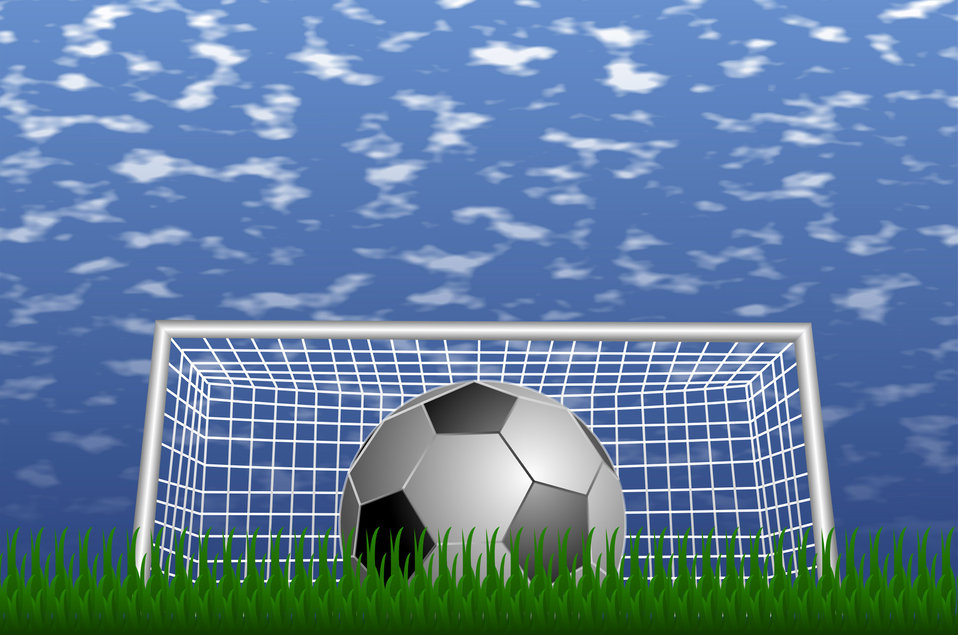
Soccer

A soccer ball in front of the goal..